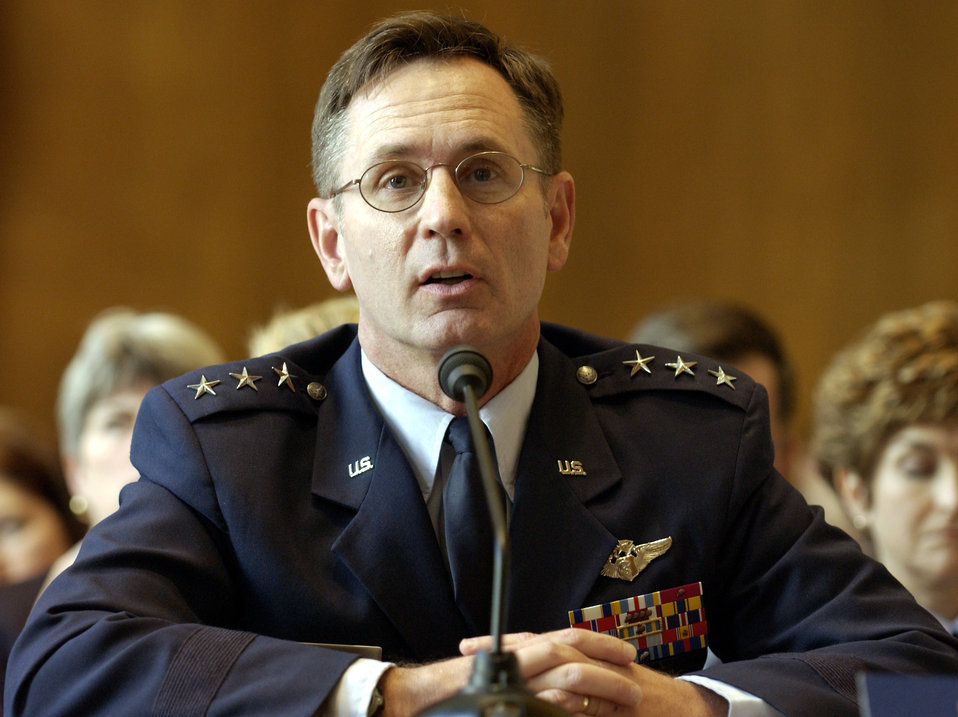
Surgeon General testimony

WASHINGTON -- Air Force Surgeon General Lt. Gen. (Dr.) George Peach Taylor Jr. answers questions on Capitol Hill about disease prevention efforts at overseas locations. Dr. Taylor spoke April 28 during a hearing of the Senate Appropriations Committee defense subsommittee.